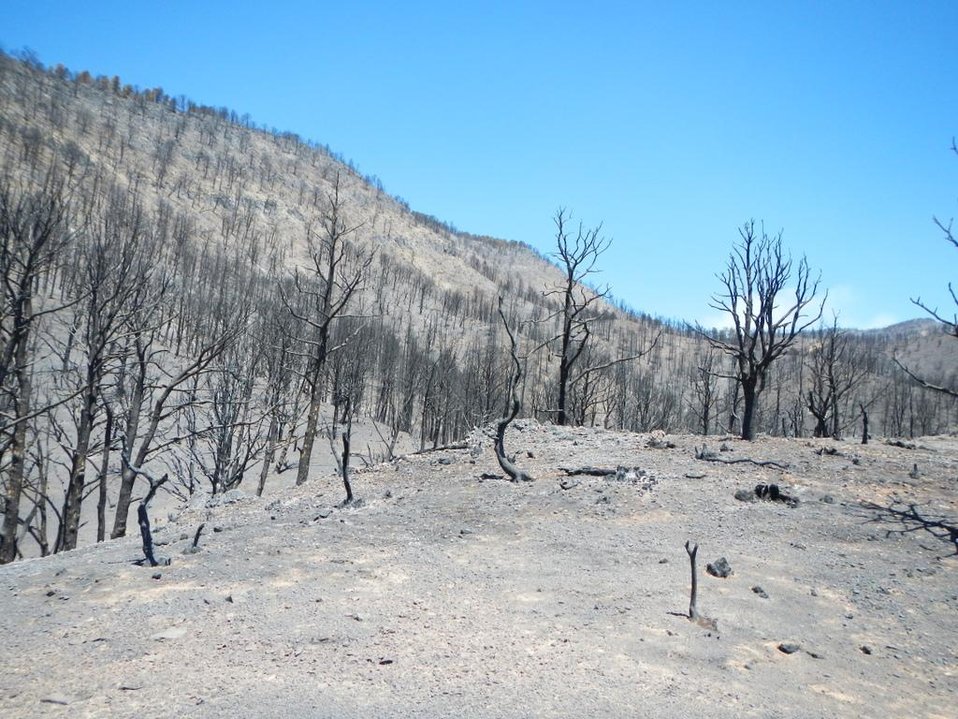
This area of high severity burn is located on the east side of the Silver Fire near Kingston, NM. The Silver Post Fire response has the Burned Area Emergency Response (BAER) team beginning operations to seed acres of high burn severity and to mulch additional acres. Seeding reduces effects to downstream life, property, and infrastructure by reducing erosion and runoff. Areas of high burn severity are to be seeded with a quick germinating, non-persistent annual cereal barley that would provide rapid ground cover. A small percentage of native perennial species would also be included to give the burned area a jump start in natural recovery, and provide for long-term ground cover. Mulch is the most effective treatment for controlling erosion and runoff, as it provides immediate ground cover. Mulch also assists in stabilizing soil in and around these areas.